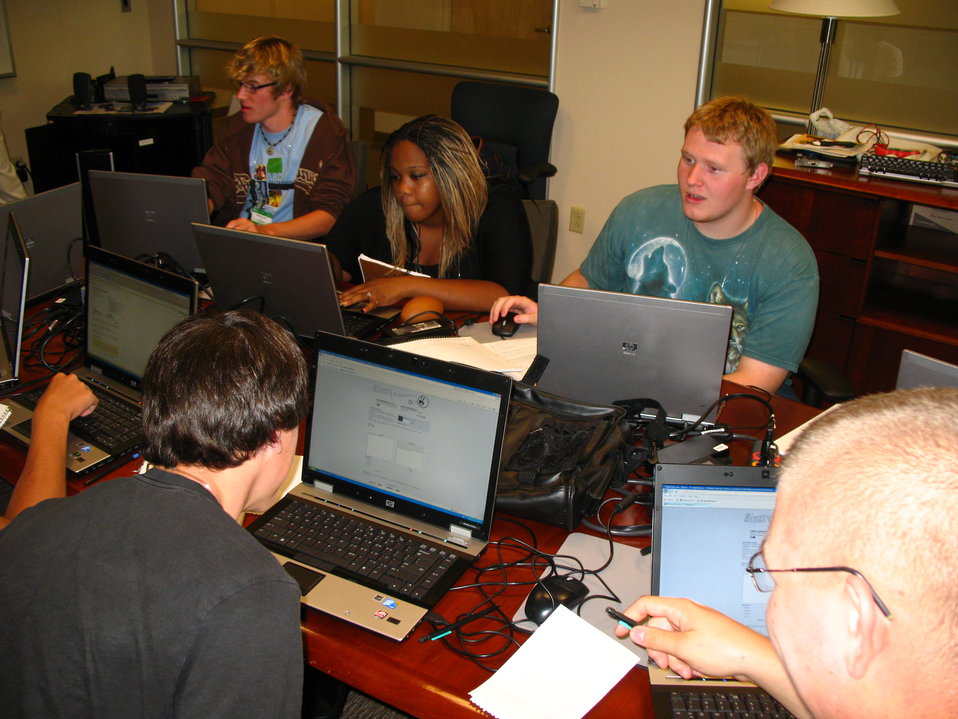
ARCSUPERS (12)